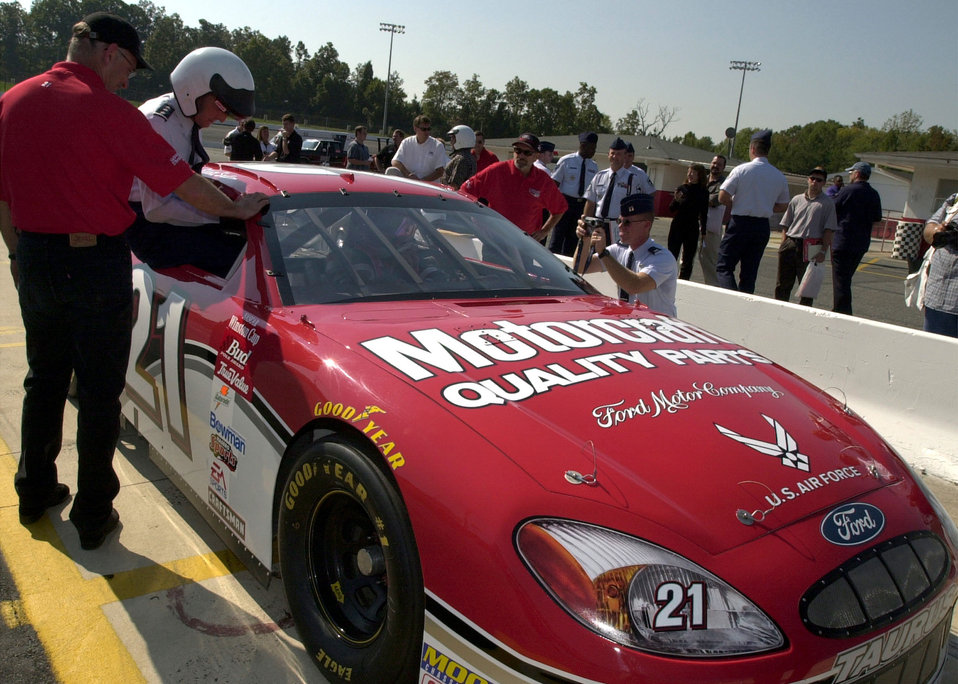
Air Force NASCAR

CONCORD, N.C. -- Lt Gen David McIlvoy, Vice Commander AETC climbs into the Wood Brothers Racing #21 at Concord Motor Speedway Elliott Sadler, the driver of the #21 race car took Gen Mcilvoy for a few laps around the speedway to give him the experince of what it feels like to race. The U.S. Air Force announced on October 4, 2000 that it will advertise on the Wood Brothers Racing #21 for the 2001 NASCAR Winston Cup Season.